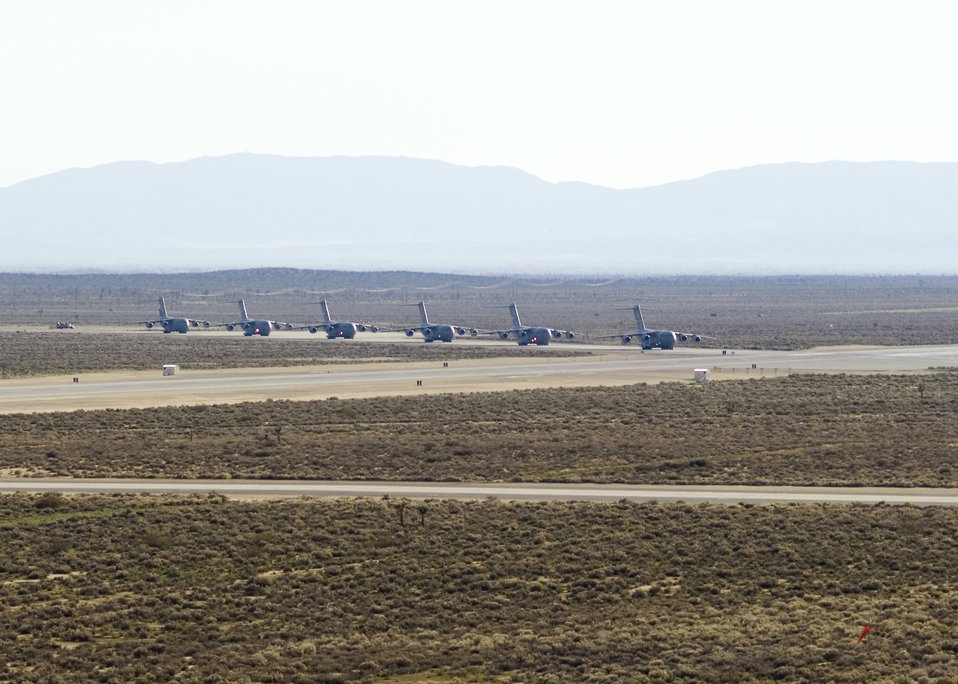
C-17s invade Edwards sky

C-17 Globemaster IIIs at Edwards Air Force Base, Calif., taxi out for a six-ship formation testing mission. The C-17 is capable of rapid strategic delivery of troops and cargo to main operating bases or directly to forward bases in deployed environments.